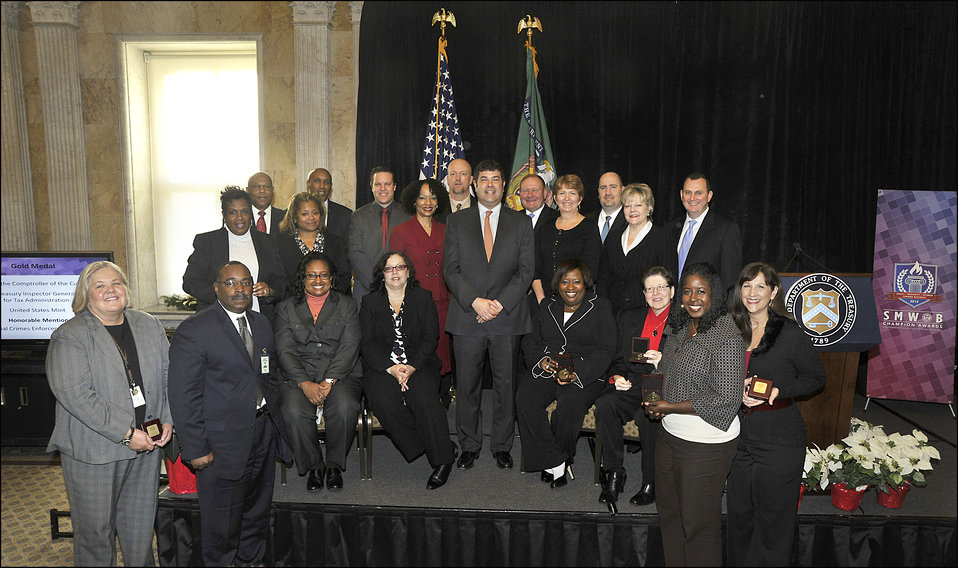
Deputy Secretary Wolin hosts Treasury’s Champion Awards

Deputy Secretary Neal Wolin hosted Treasury’s Champion Awards event to highlight Treasury’s FY 2012 small, minority, and women owned business contracting achievements.